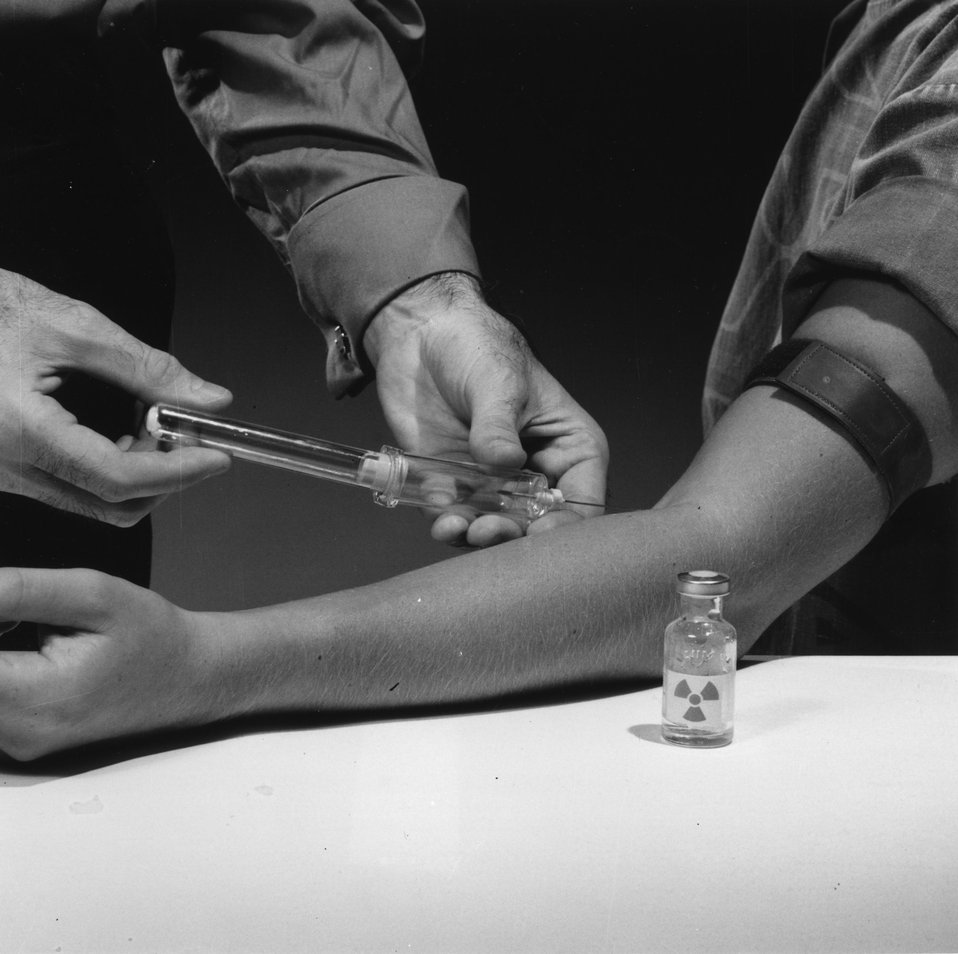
A diagnostic kit for labeling a patient's own red blood cells has been developed at Brookhaven.